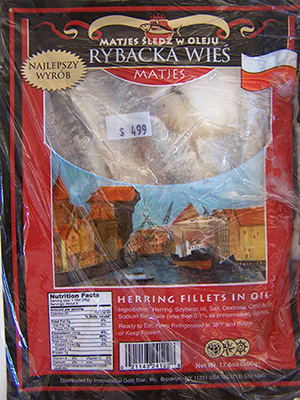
RECALLED – Herring fillets in oil

July 25, 2013 – Product Recall – Gold Star Smoked Fish Corp. Issues an Alert on Listeria in Rybacka Wies Brand Herring Fillets in Oil 'Matjes Sledz w oleju'.